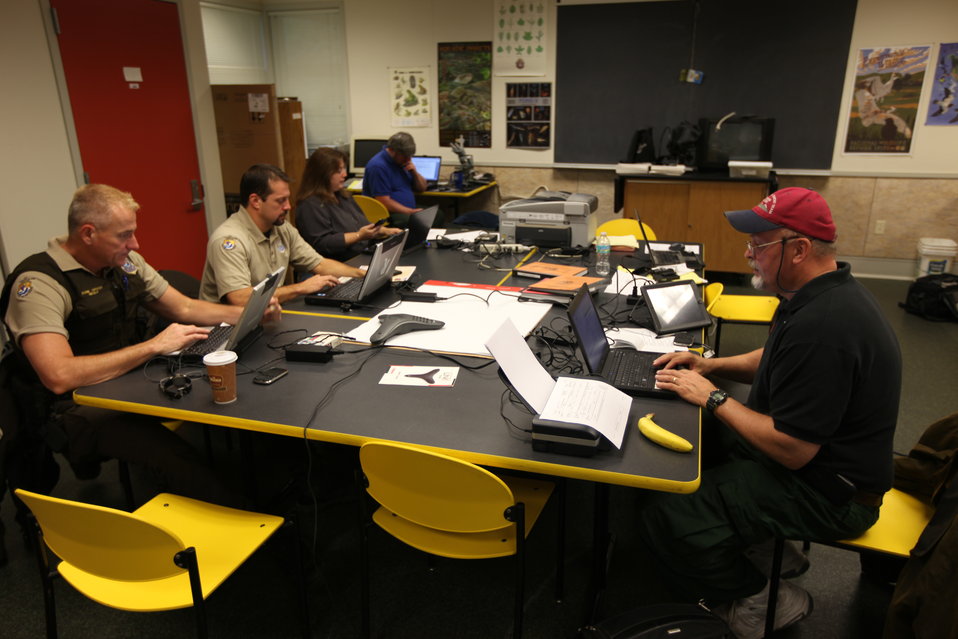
U.S. Fish and Wildlife Service incident command center

U.S Fish & Wildlife Service staff commander David Nicely, John Starcher, Pam Carota, Gerald Vickers Jr.at the Incident Command Center based at the John Heinz National Wildlife Refuge in Philadelphia, Penn.